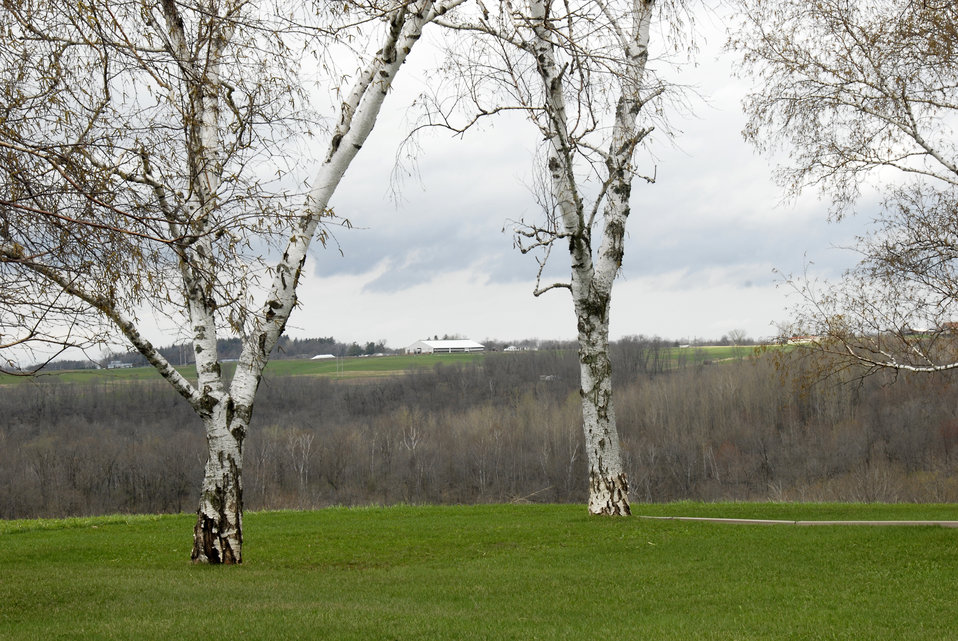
Birch trees sit on small rise on a farm in La Crosse, Wisconsin on April 25, 2008. The U.S. Department of Agriculture’s (USDA) Natural Resource Conservation Service (NRCS) has various programs to assist farmers and ranchers in implementing and maintaining conservation practices that will enable them to have more sustainable and profitable farms and ranches.